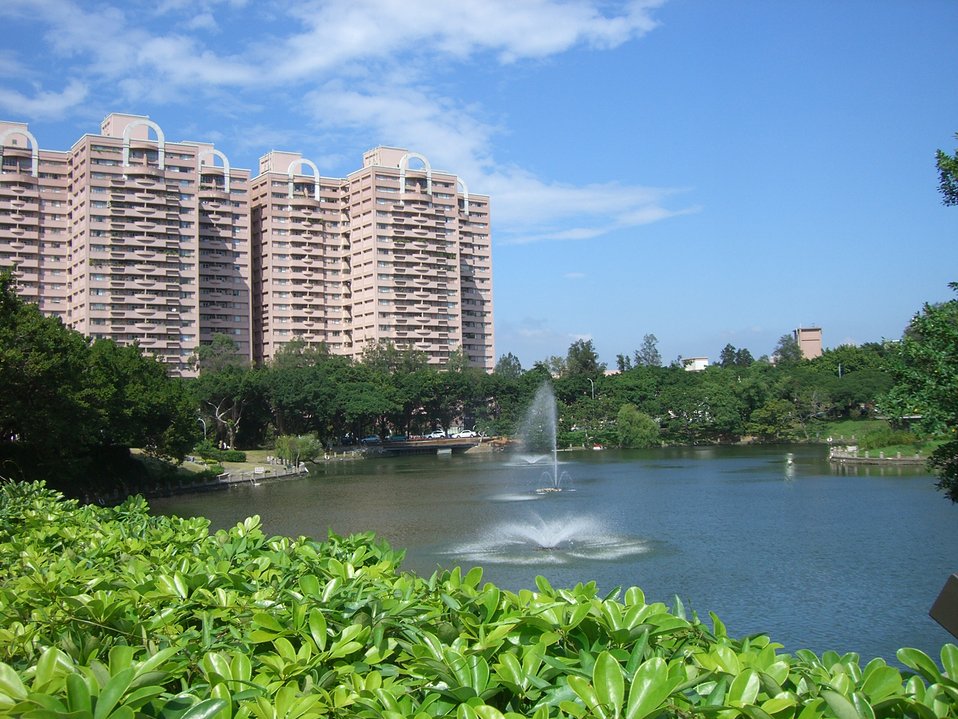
NCTU campus